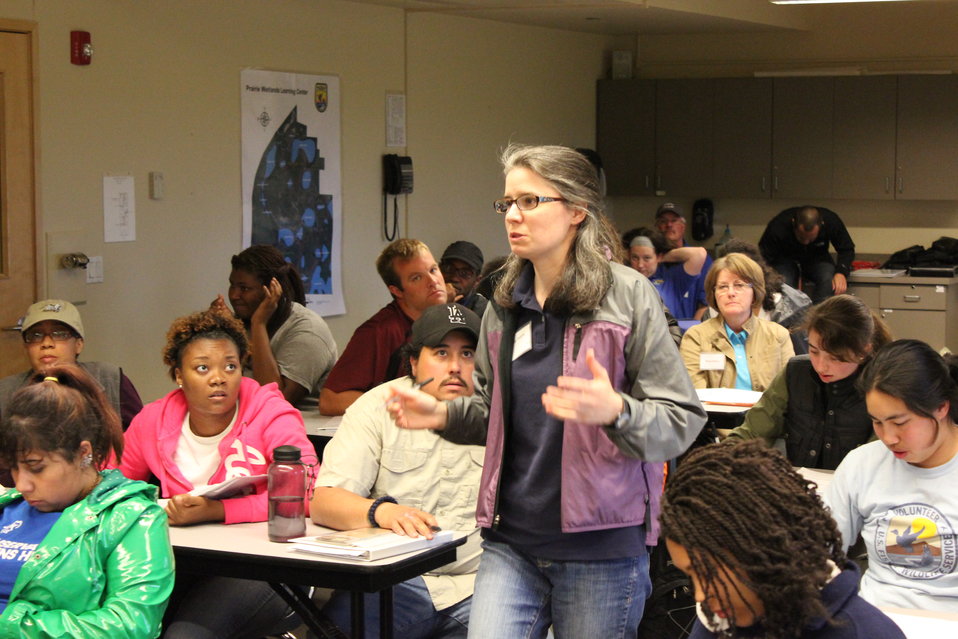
CDIP 2012 Fergus Falls

Emily, addressing the CDIPs